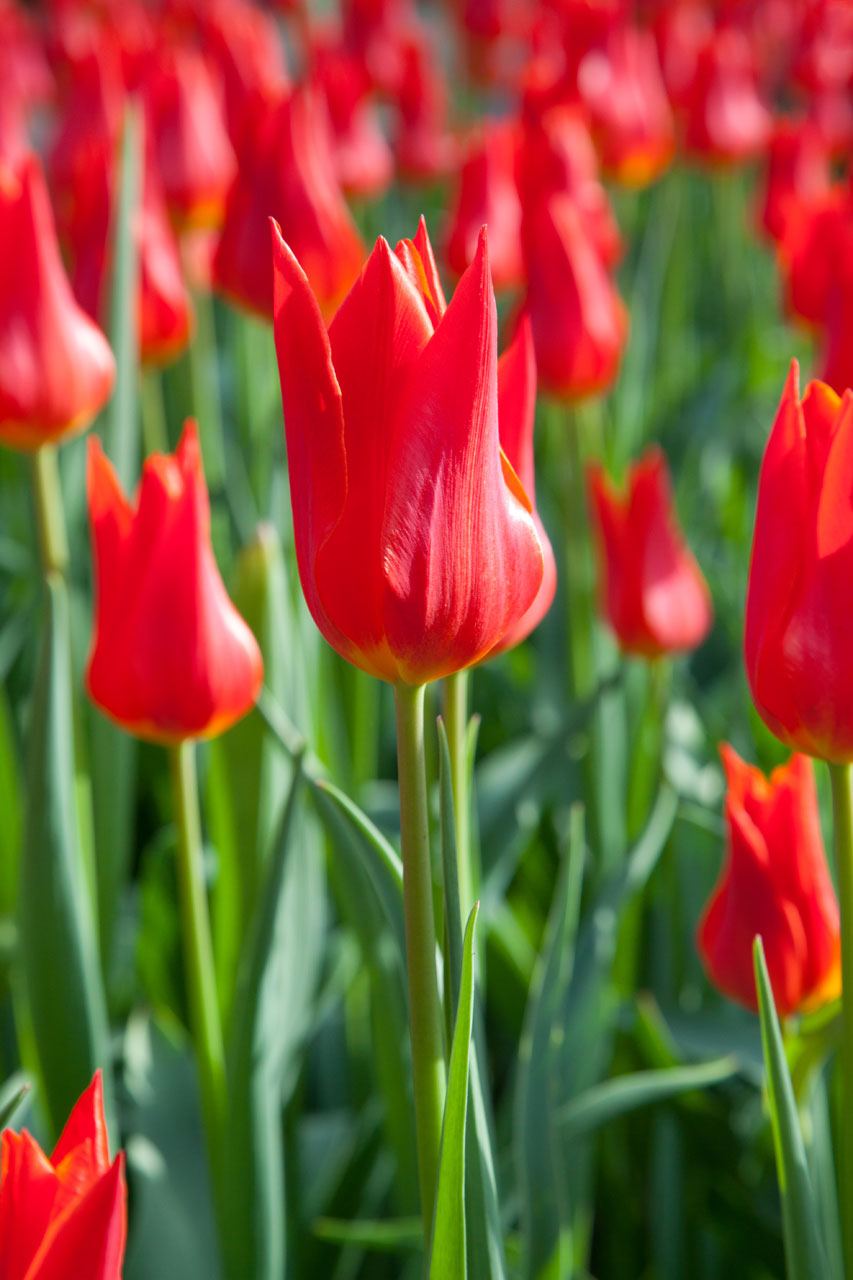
Red tulip

Closeup photo of a red tulip in tulip flower bed.